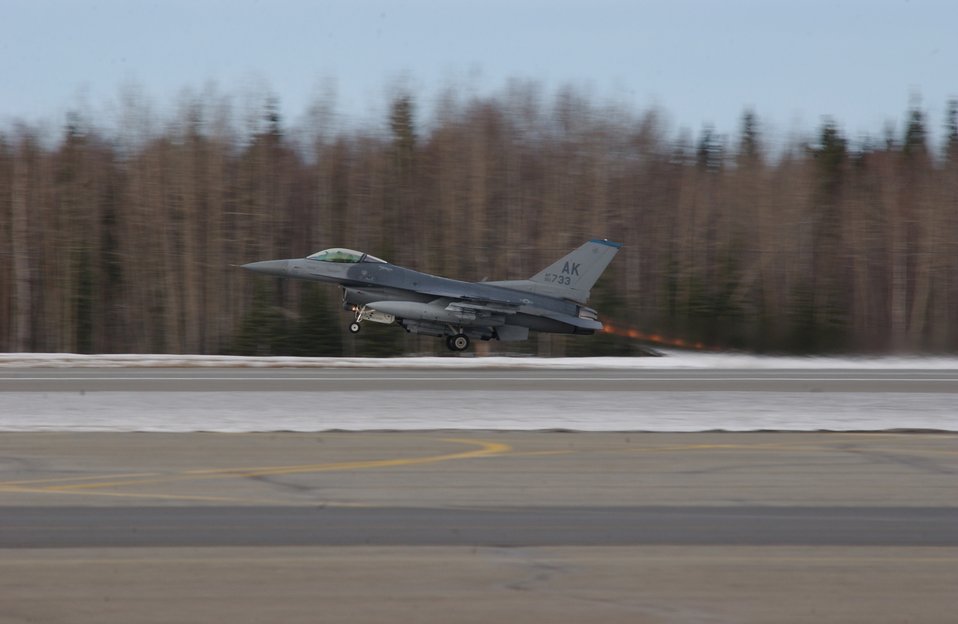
Falcon flame

EIELSON AIR FORCE BASE, Alaska -- An F-16 Fighting Falcon from the 18th Fighter Squadron here takes off from the flightline April 9 as a part of the wing's operational readiness exercise.